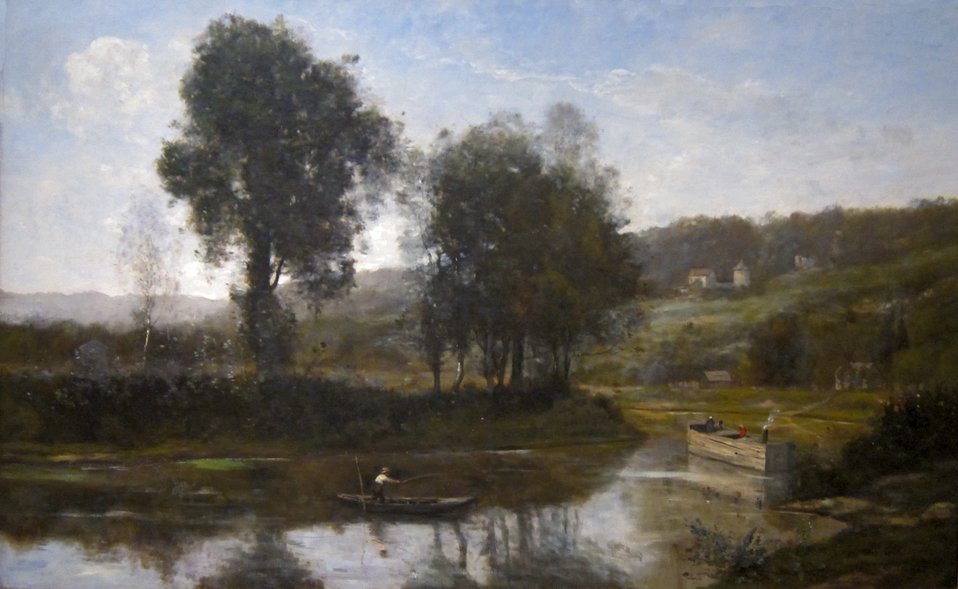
'The Bend in the Seine at Port Marly' by Corot, Cincinnati Art Museum